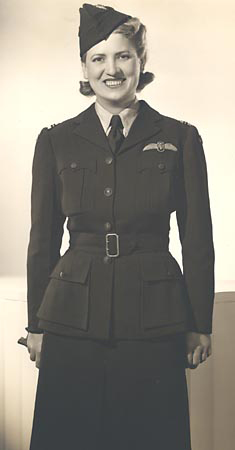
Jacqueline Cochran

Jacqueline